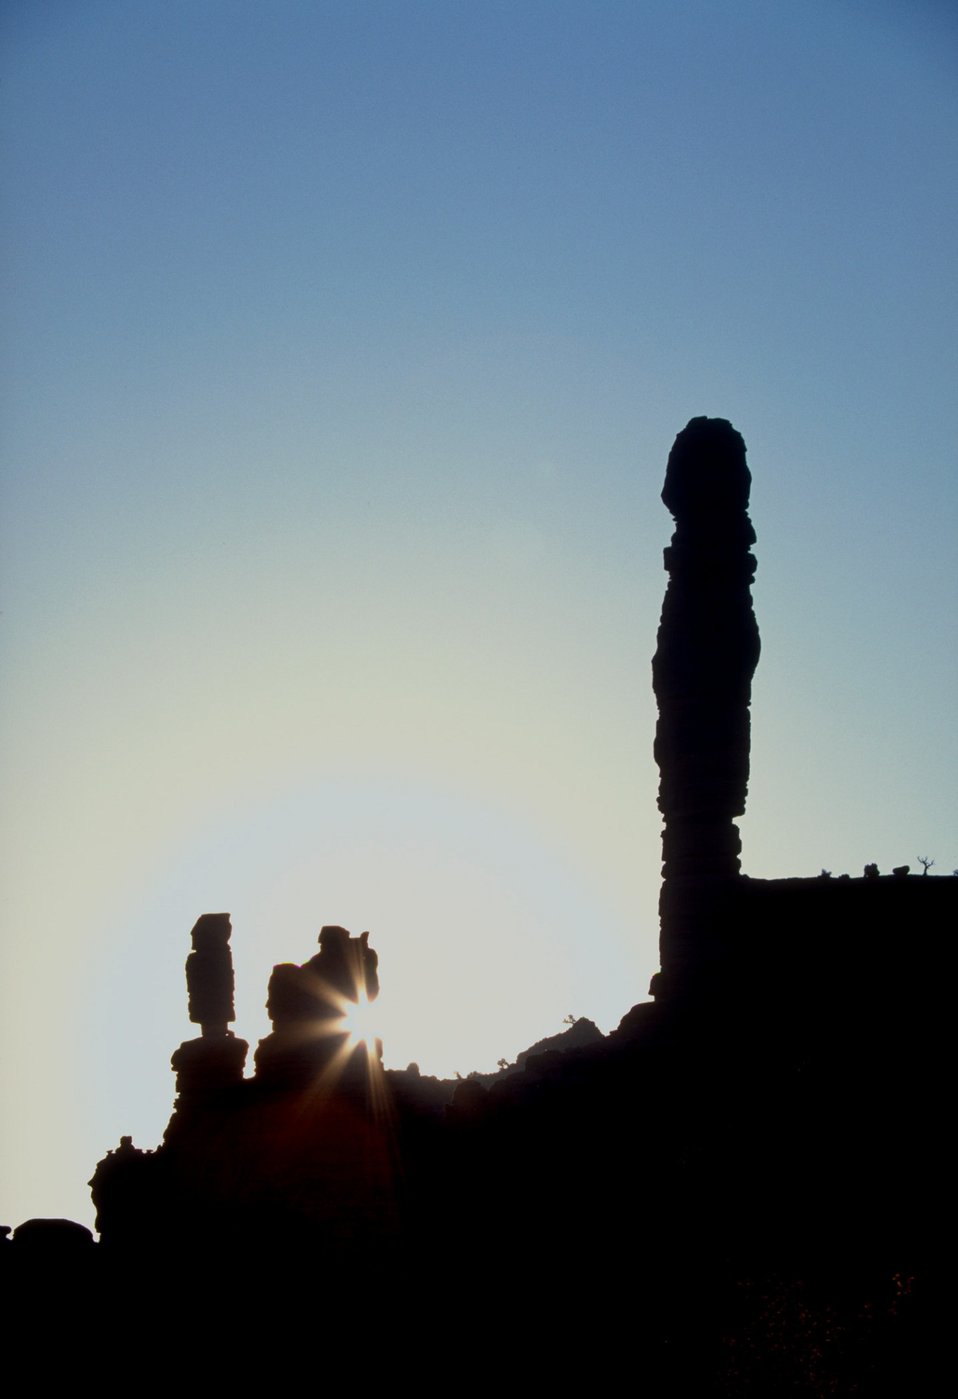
Spires silhouetted in Onion Creek area near Moab, Utah.